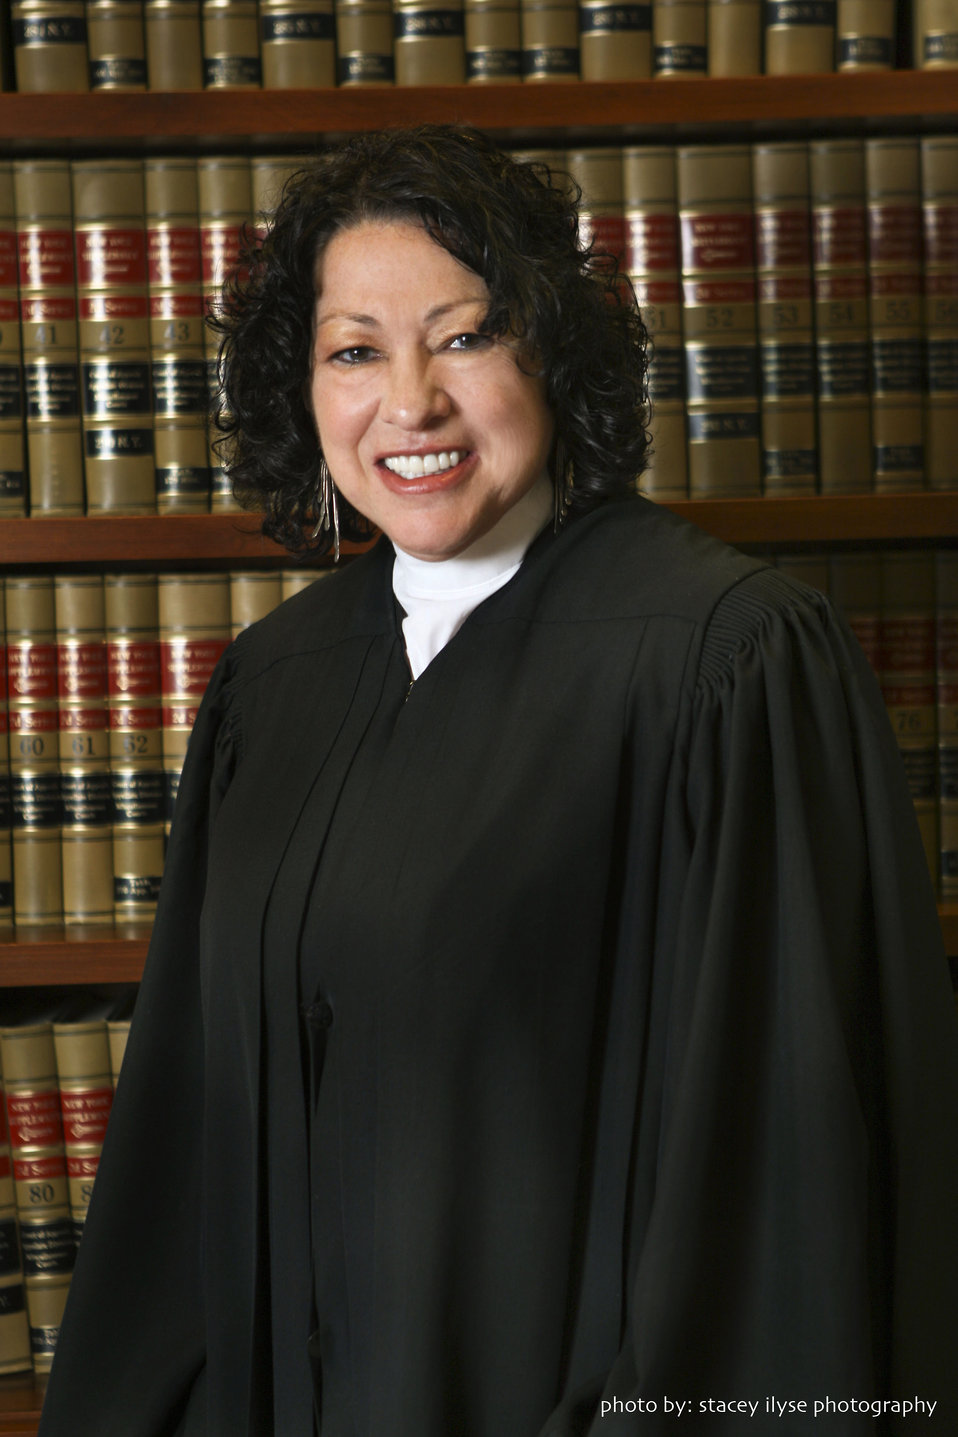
SotomayorPhotos-1048

Judge Sonia Sotomayor in 2009.